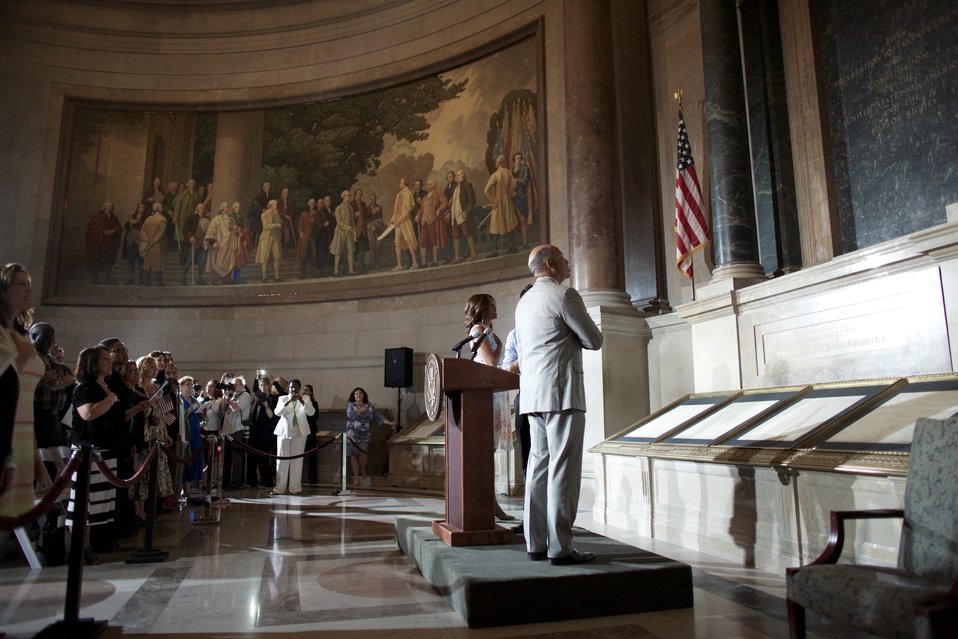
Naturalization Ceremony with Michelle Obama